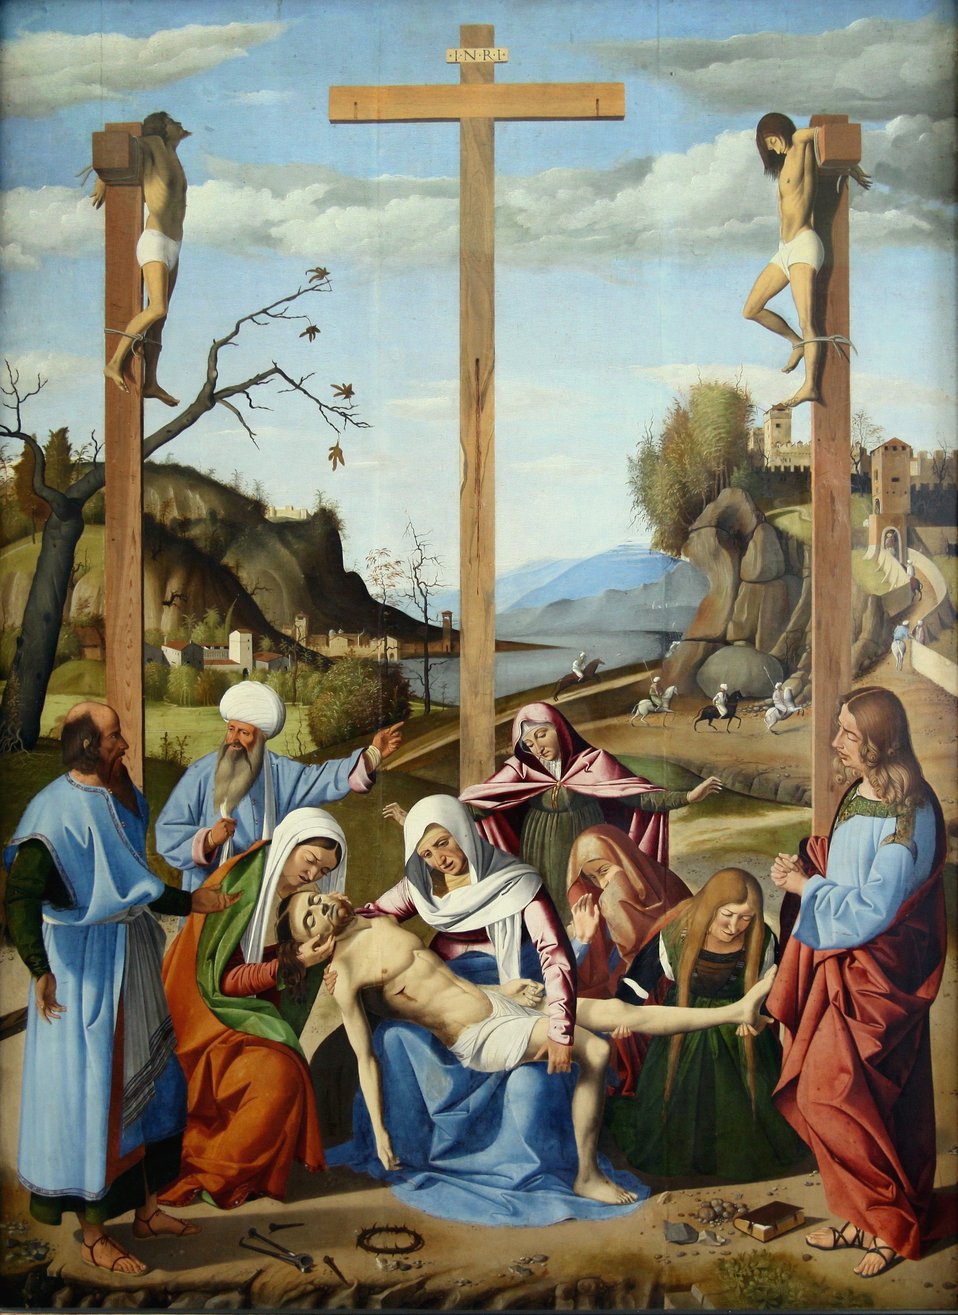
11 Marco Basaiti. The Deposition, Alte Pinakotek, Munich